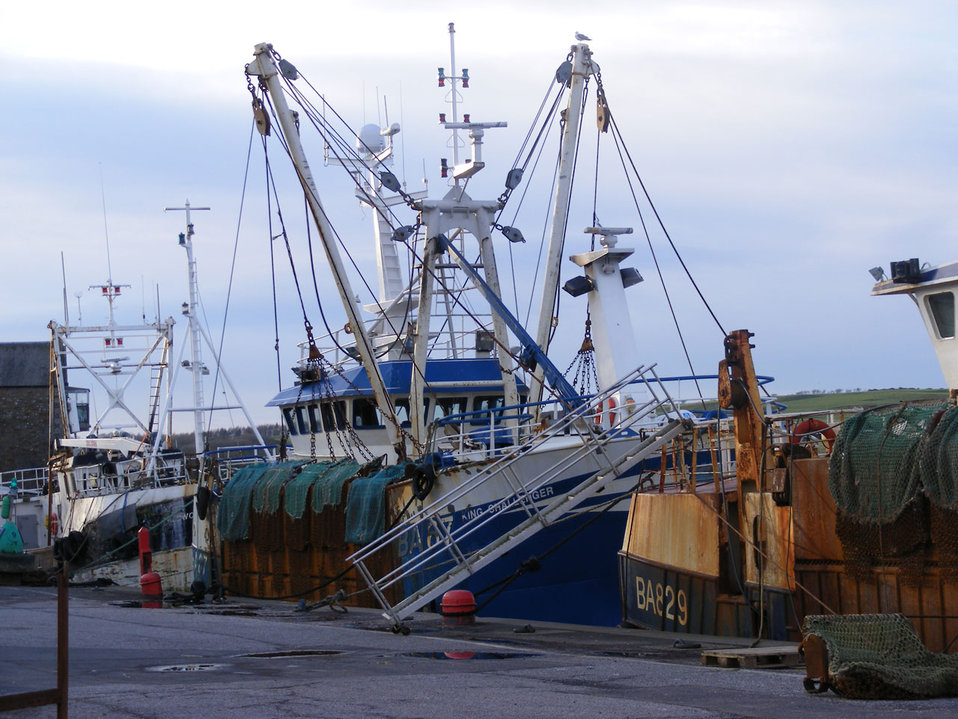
Trawlers at kirkcubright harbour, south west scotland.